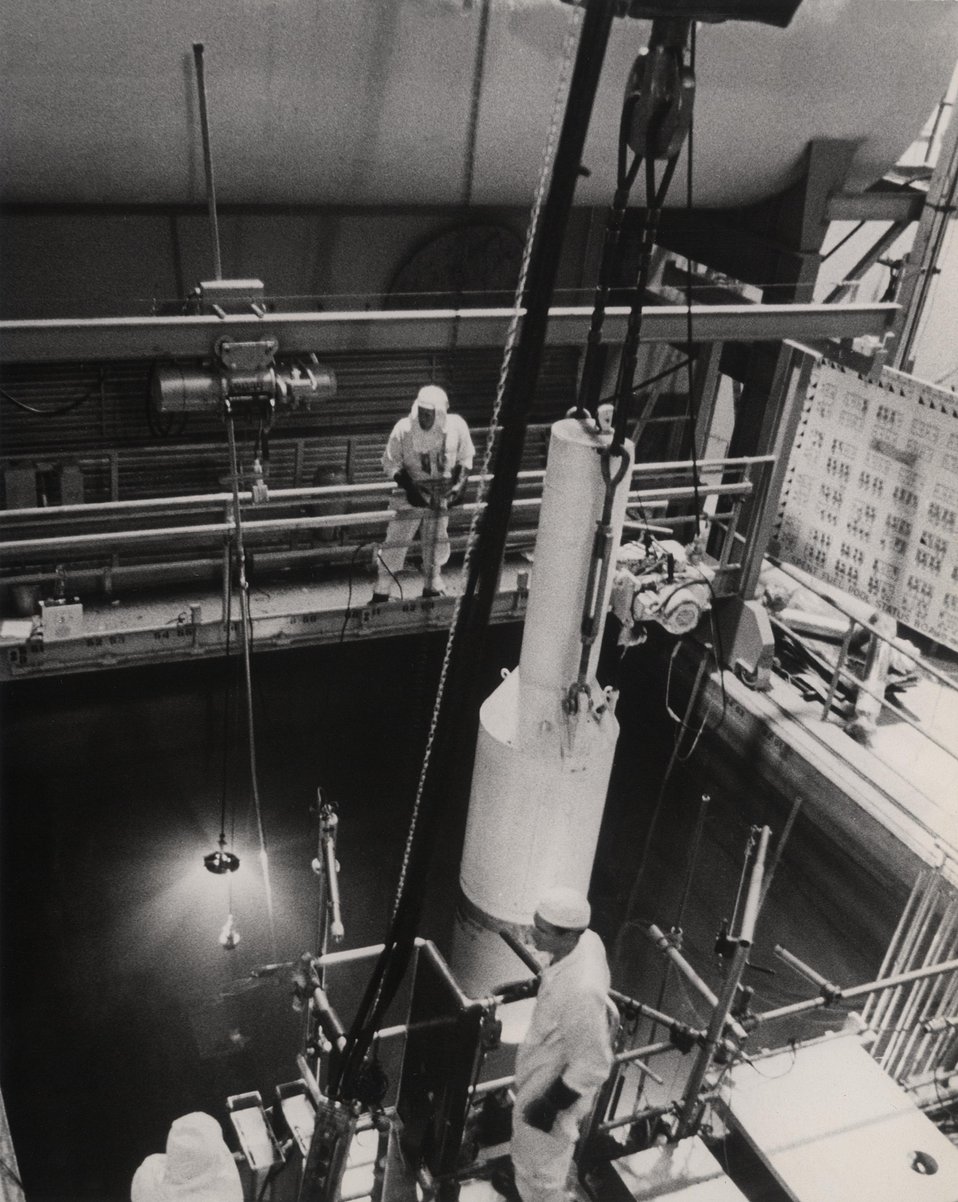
Into the pool goes spent fuel from Pacific Gas and Electric's Humbolt Bay nuclear power unit.